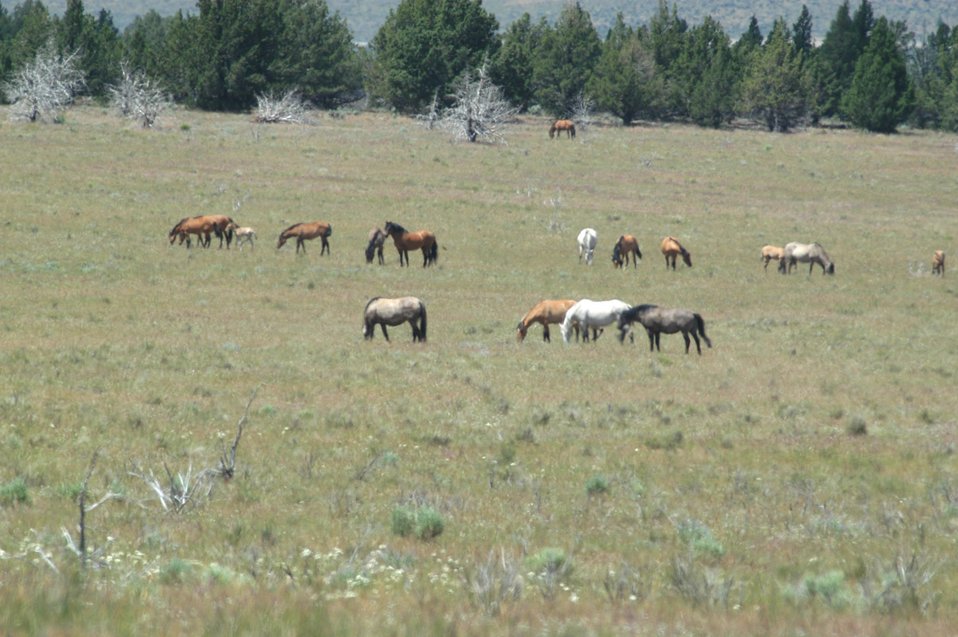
Kiger horses roam the plateaus of the Kiger Wildhorse Herd Management Area near Steens Mountain in Southeastern Oregon.